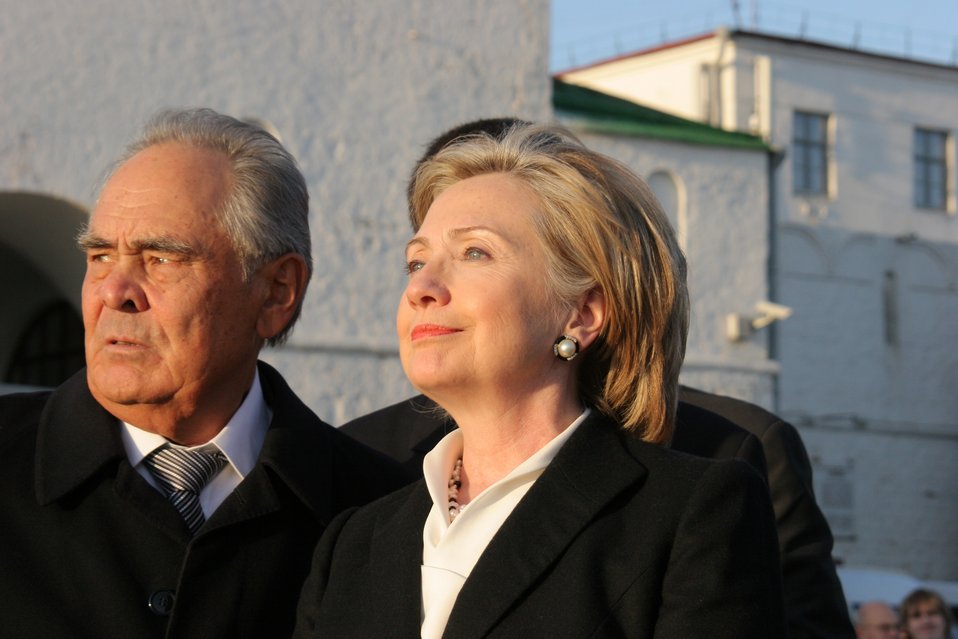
Secretary Clinton and President Shaimiev Visit the Mussa Jalil Memorial

U.S. Secretary of State Hillary Rodham and Clinton President Shaimiev visit the Mussa Jalil memorial in Kazan, Russia October 14, 2009.